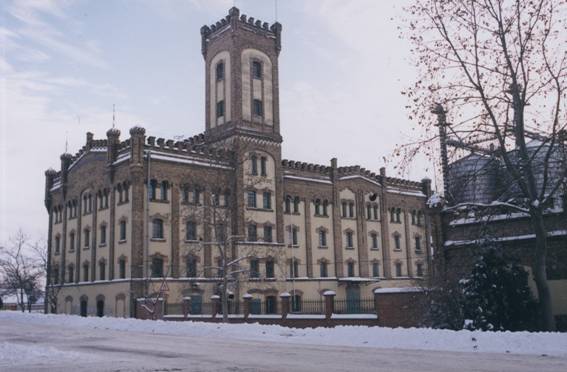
Magyar: Jánoshalma, malom. (saját kép)